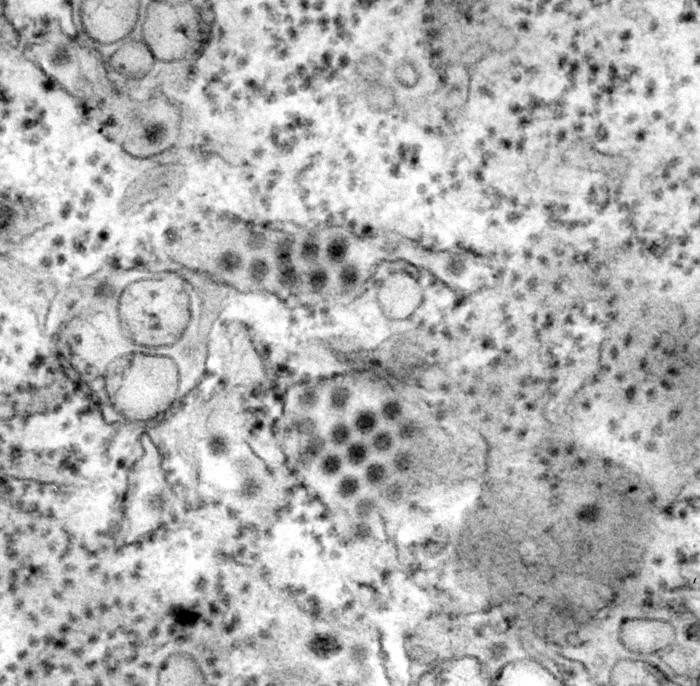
This transmission electron micrograph (TEM) depicts a number of round, Dengue virus particles that were revealed in this tissue specimen.